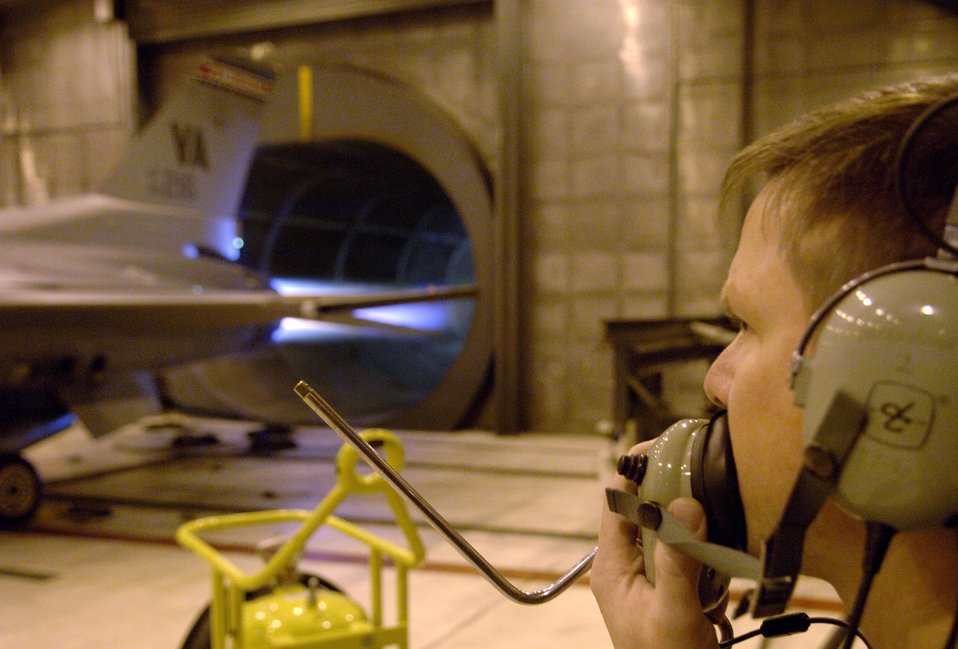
Guard fighter aircraft transition

Tech. Sgt. Jonathan Cooper coordinates an engine run at the Virginia Air National Guard located at Sandstone, Va., on Friday, March 31, 2006. The Virginia ANG is currently transitioning to the new F-22A Raptor at Langley Air Force Base and will replace the F-16 Fighting Falcons as early as October 2007. Sergeant Cooper is a maintenance technician with the 192 Aircraft Maintenance Squadron.